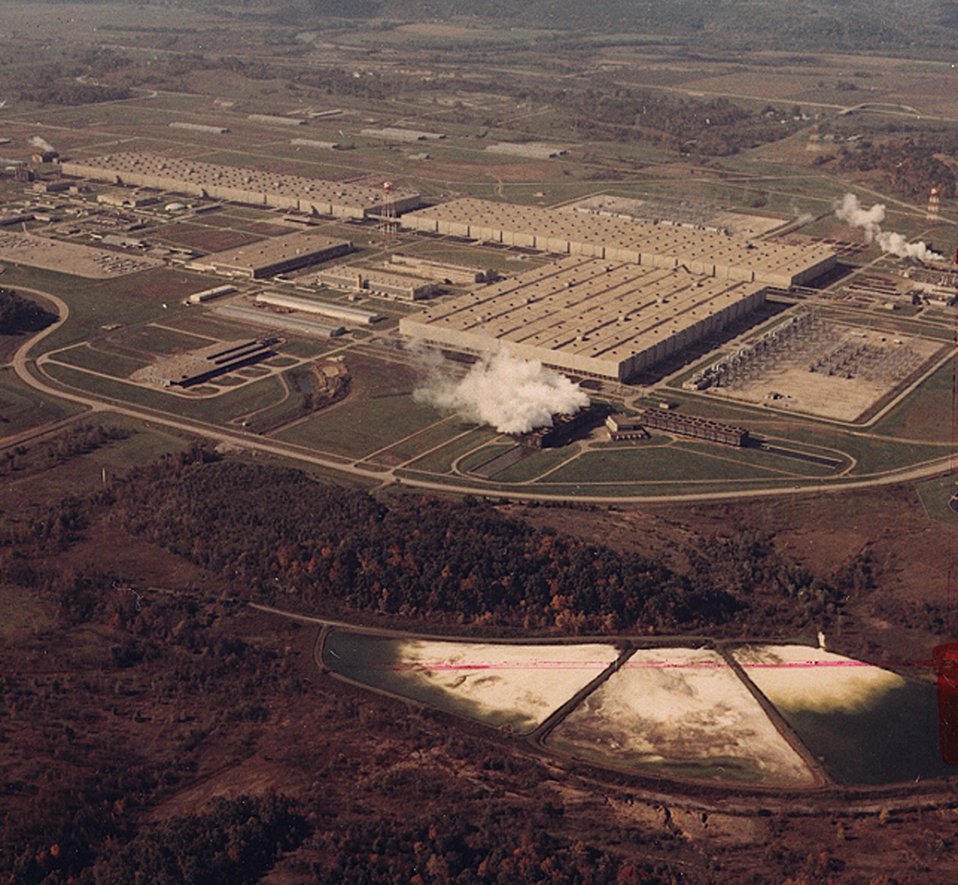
Portsmouth Gaseous Diffusion Plant. c. 1970